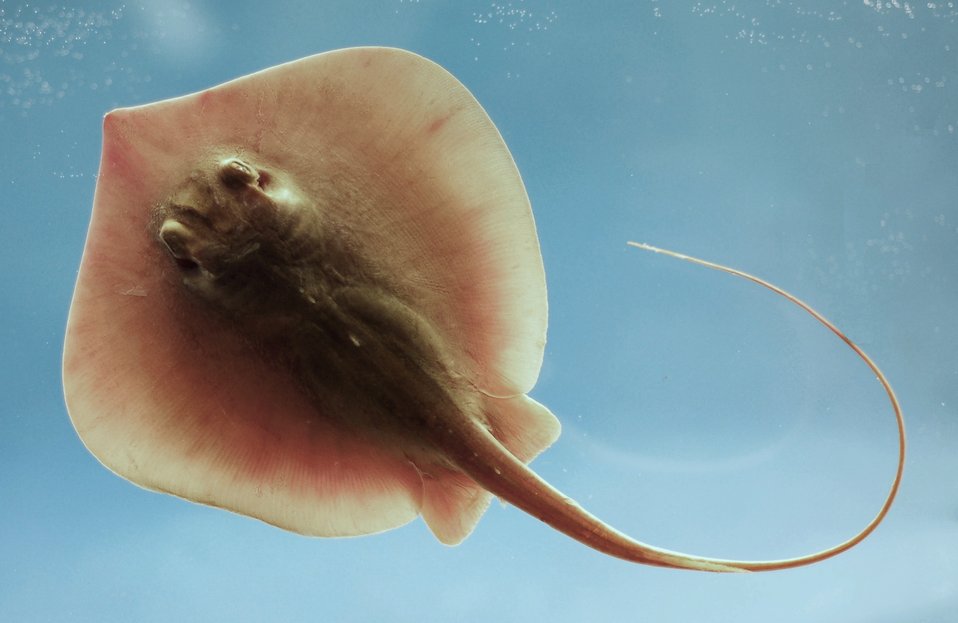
Atlantic stingray ( Dasyatis sabina )